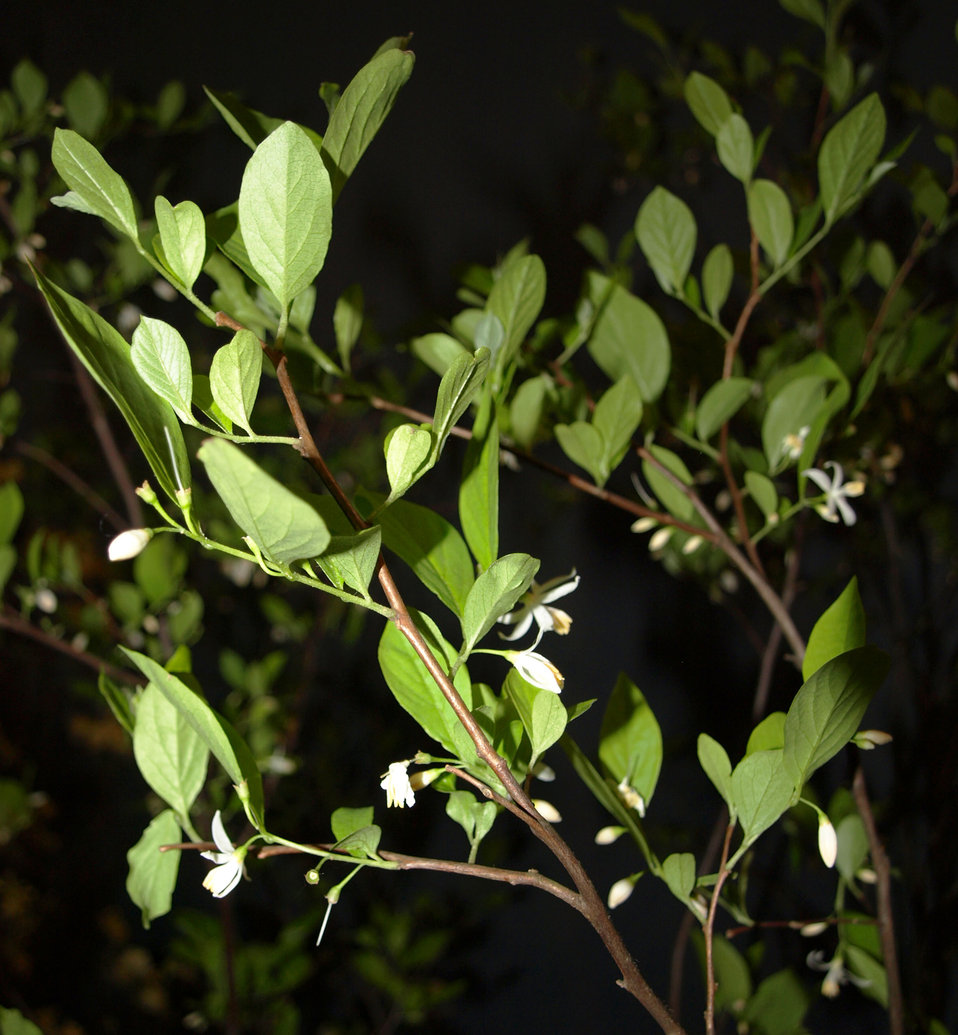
American snowbell

Styrax americanus (American snowbell), a native plant

Learn more about EPA’s Exhibit at the 2010 Philadelphia International Flower Show:
www.epa.gov/reg3esd1/garden/flower show.htm
www.epa.gov/reg3esd1/garden/flower show plants.htm
www.epa.gov/reg3esd1/garden/pdf/flowershow2010.pdf (6 pp, 864K)